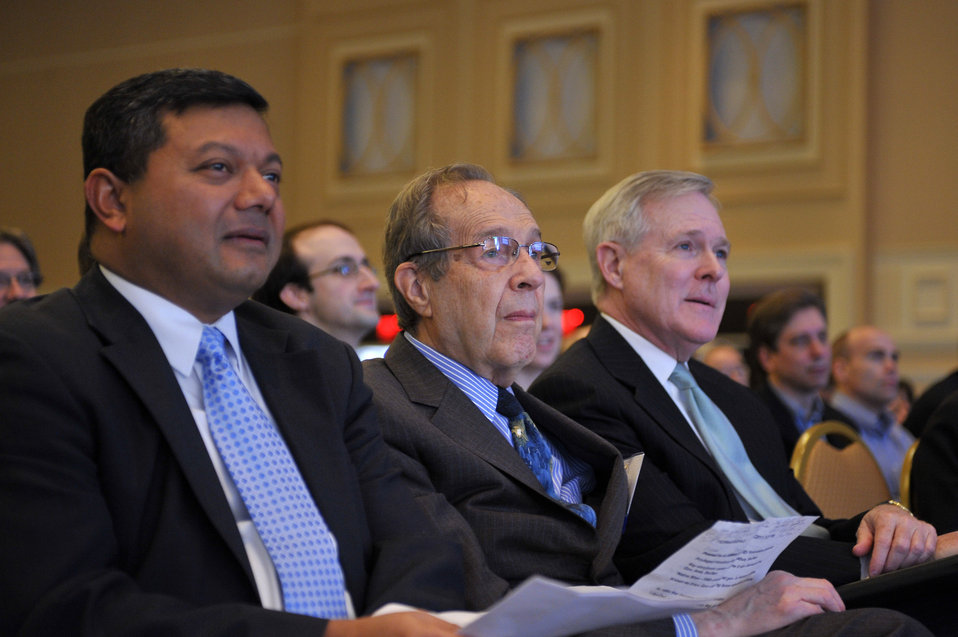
ARPA-E Energy Innovation Summit 2011, 69 of 83

Dr. Arun Majumdar, Director ARPA-E, and William Perry Ph.D, Standford Professor and Former Secretary of Defense and Ray Mabus, Secretary of the Navy.